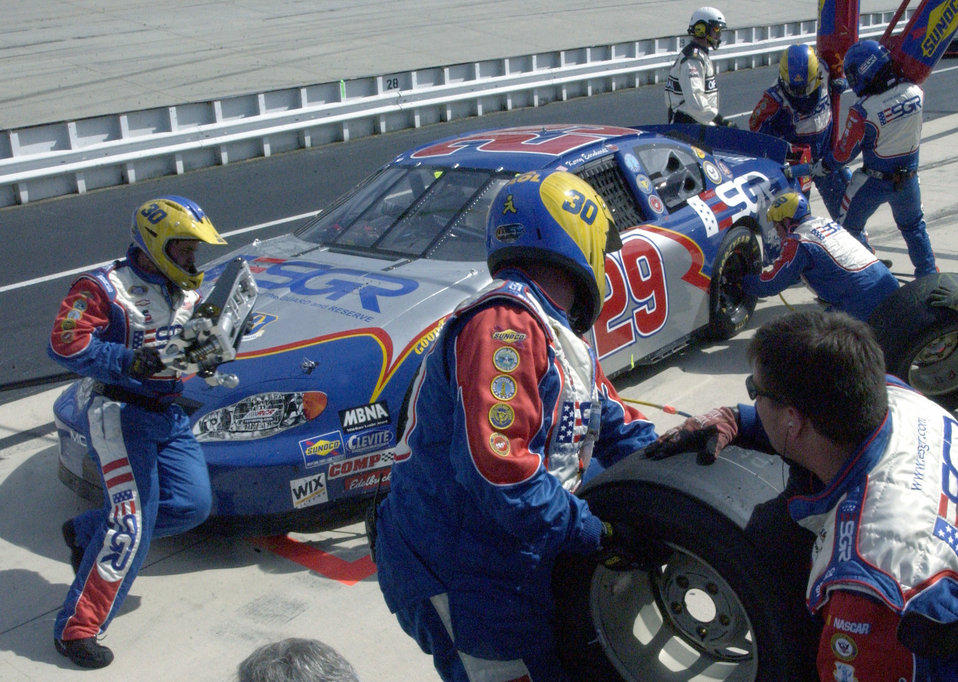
Guard, Reserve on fast track

DOVER INTERNATIONAL SPEEDWAY, Del. -- Pit crews of the Employer Support of the Guard and Reserve No. 29 car rush to get driver Kerry Earnhardt out of the pits during the NASCAR Busch Series Race here Sept. 25. ESGR is a Defense Department volunteer organization that provides free education and consultation for employers of guardsmen and reservists. Its goal is to support America's employers who share their employees with the nation to ensure national security. Mr. Earnhardt finished 23rd.